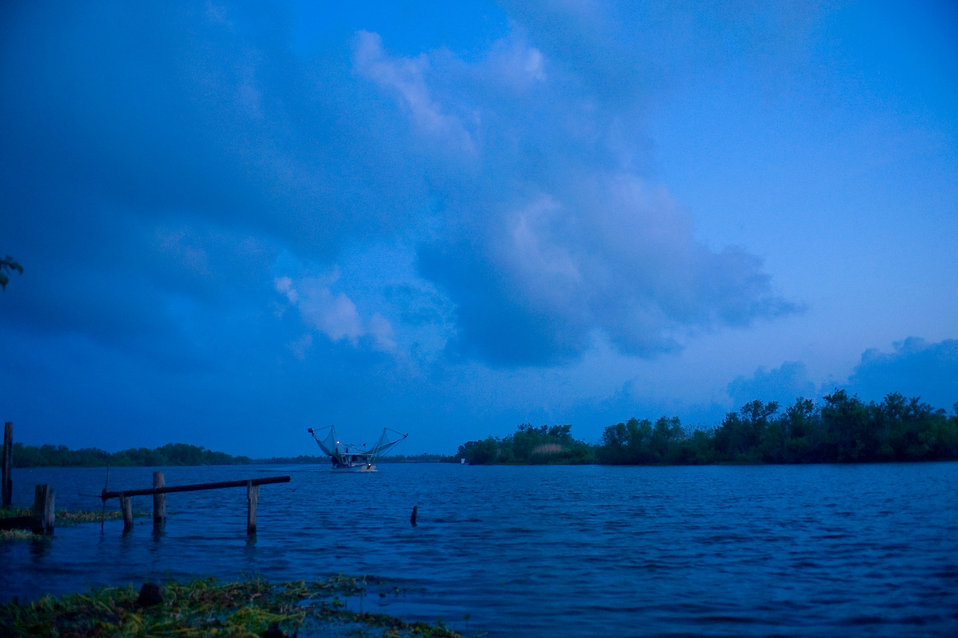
Working into the night.

May 12, 2010.